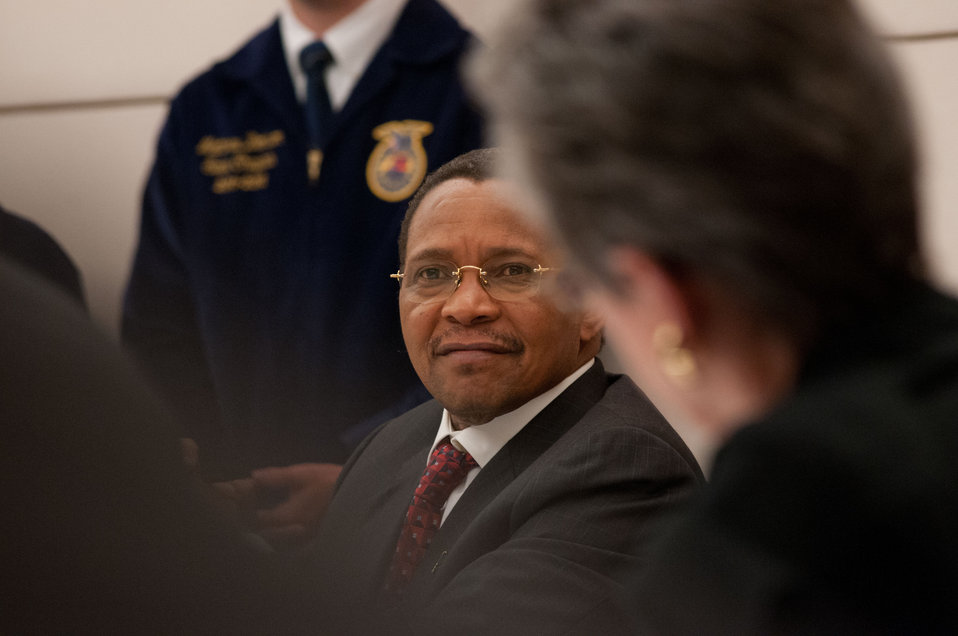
President of the United Republic of Tanzania His Excellency Jakaya Kikwete makes remarks at the African Heads of State conference at the Ronald Reagan Federal Building in Washington, D.C., on Friday, May 18, 2012.